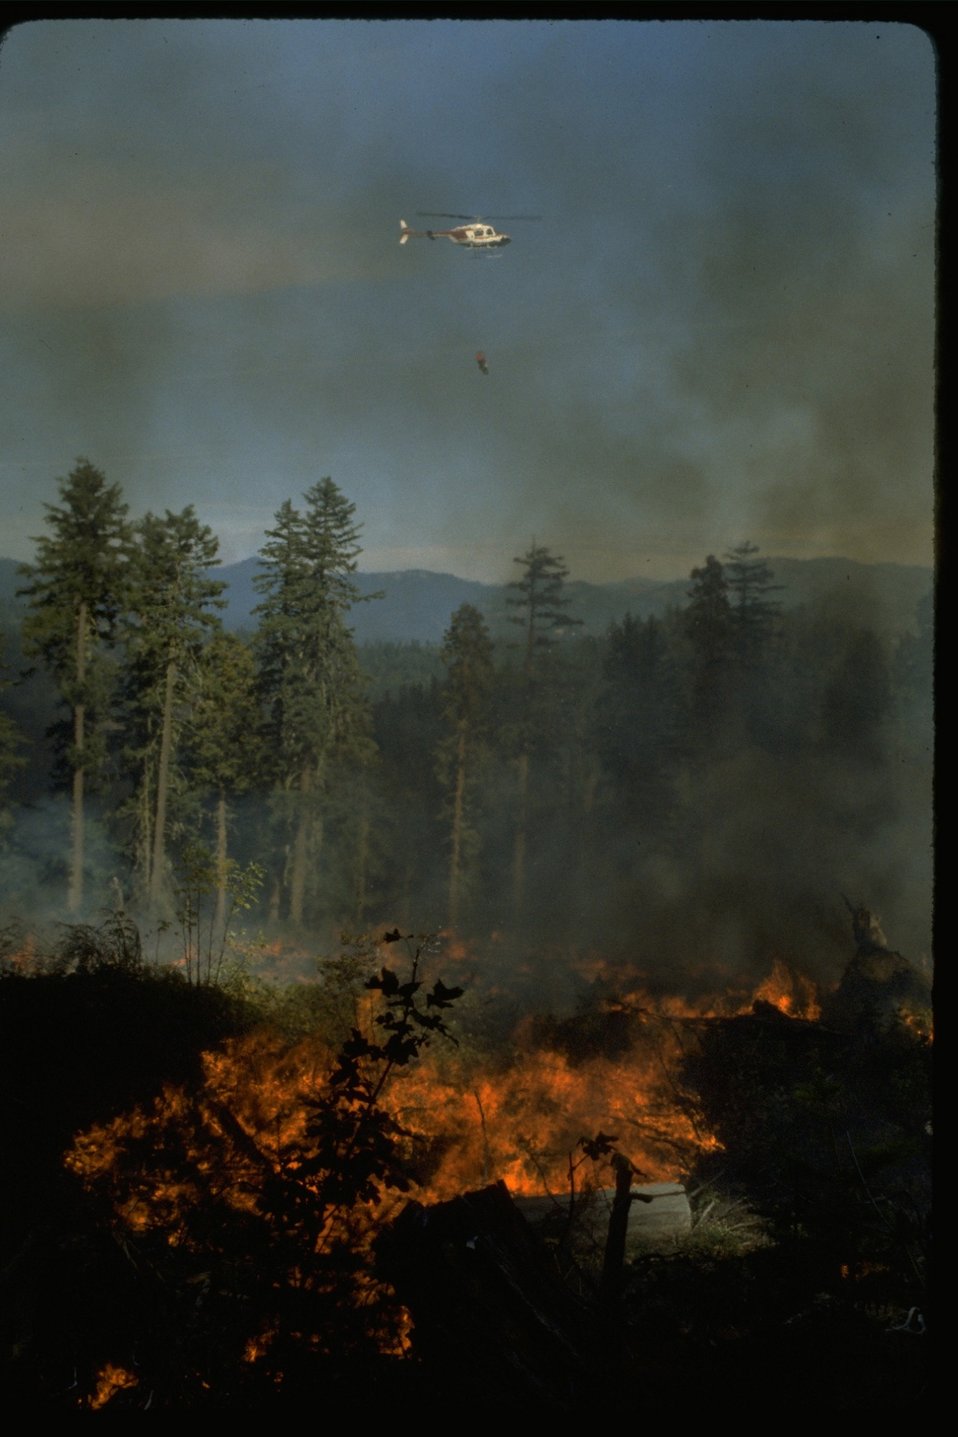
Helicopter flying over a prescribed fire.